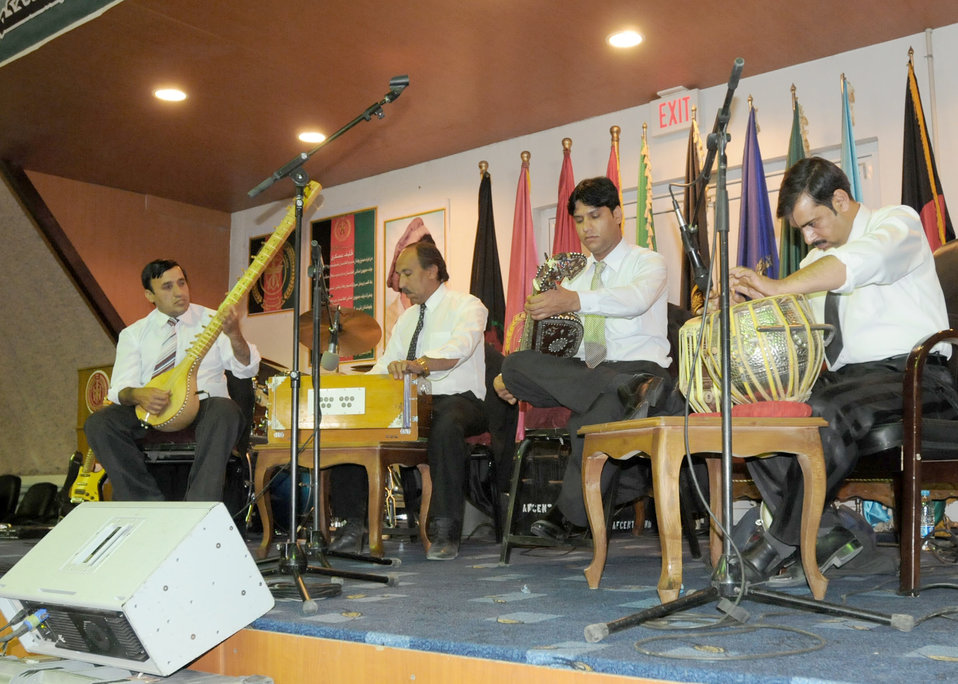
AFCENT/ANA band

The U.S. Air Force Central Command band plays to an Afghan and NATO Air Training-Afghanistan audience Oct. 16, 2010, in Kabul, Afghanistan. This morale event featured both the AFCENT band and the Afghan National Army band .